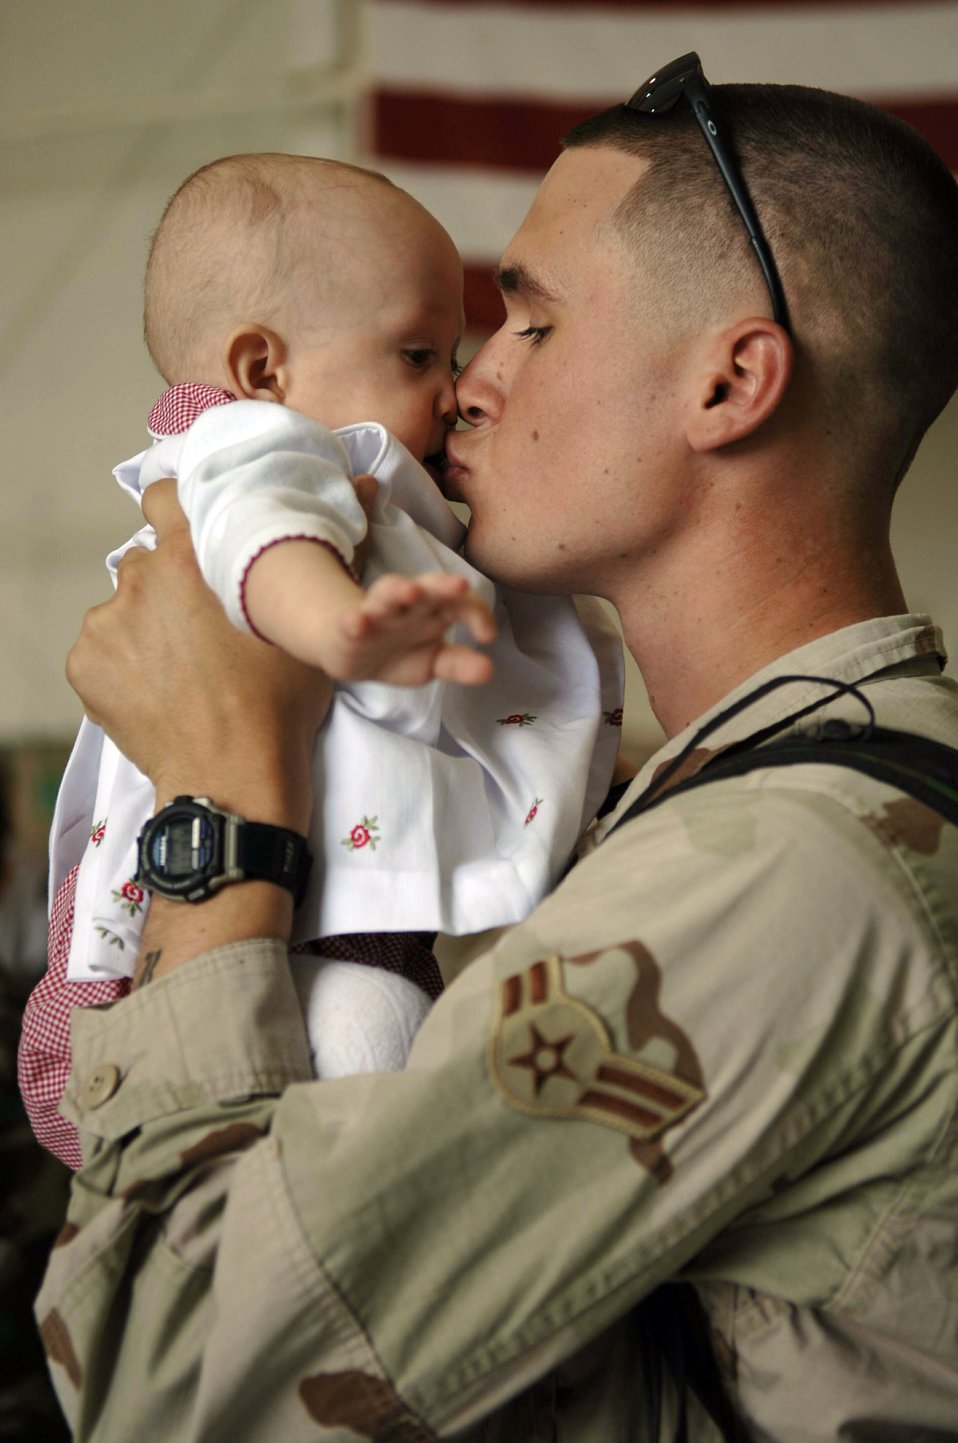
Welcome back to Arizona

Airman 1st Class Daniel Wurdinger kisses his daughter, De`nae, as he returns to Davis-Monthan Air Force Base, Ariz., from his deployment in support of Operation Iraqi Freedom, Friday, March 17, 2006. Airman Wurdinger is with the 355th Security Forces Squadron.